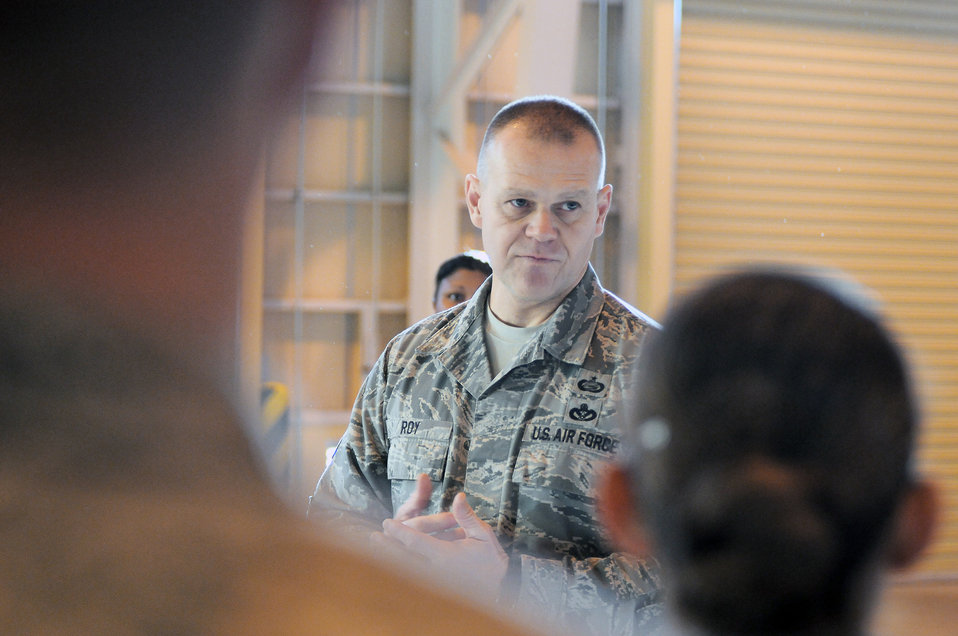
McConnell AFB officials focus on suicide prevention

Chief Master Sgt. of the Air Force James Roy visits 374th Logistics Readiness Squadron members Dec. 28, 2010, during his visit to Yokota Air Base, Japan. Chief Roy visited Yokota AB as part of his tour of the Pacific.